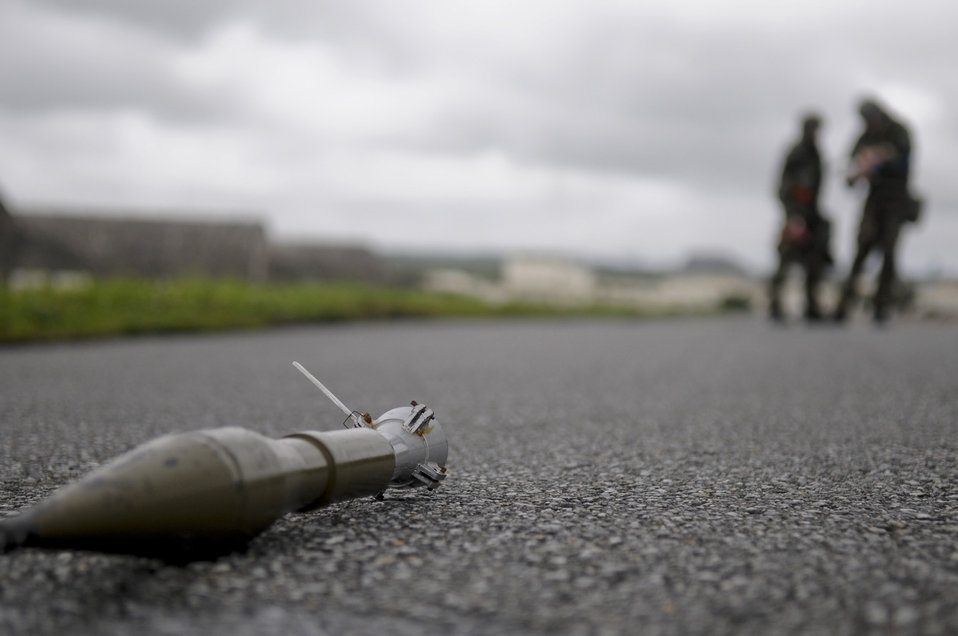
Local operational readiness exercise

Airmen from the 67th Aircraft Maintenance Unit encounter simulated unexploded ordnance during a post-attack reconnaissance sweep May 19, 2011, at Kadena Air Force Base, Japan.